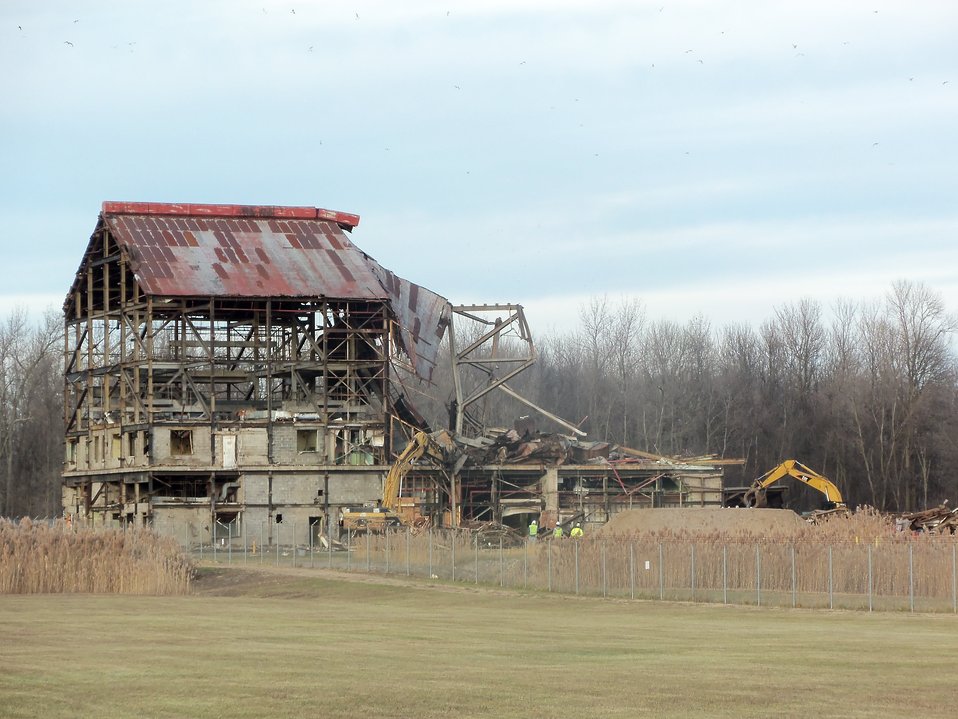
Building 401 shell.

Activities from the Niagara Falls Storage Site, which is associated with the former Lake Ontario Ordnance Works. Formerly Utilized Sites Remedial Action Program (FUSRAP), a program initiated in 1974 to identify, investigate and clean up or control sites that were part of the Nation's early atomic energy and weapons program. Activities at the sites that are eligible for FUSRAP were conducted by Manhattan Engineer District (MED) or the Atomic Energy Commission (AEC), both predecessors of the Department of Energy (DOE). The U.S. Army Corps of Engineers was assigned management of FUSRAP by Congress in 1997.